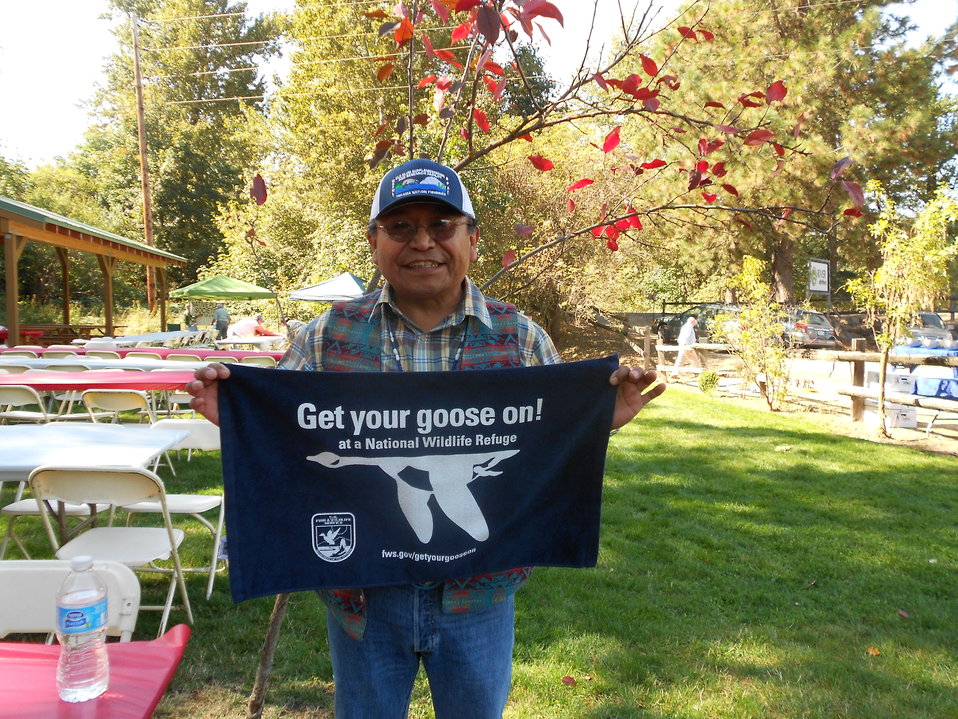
Get Your Goose On! - Yakama Nation Style

Gerald Lewis of the Confederated Bands and Tribes of the Yakama Nation.